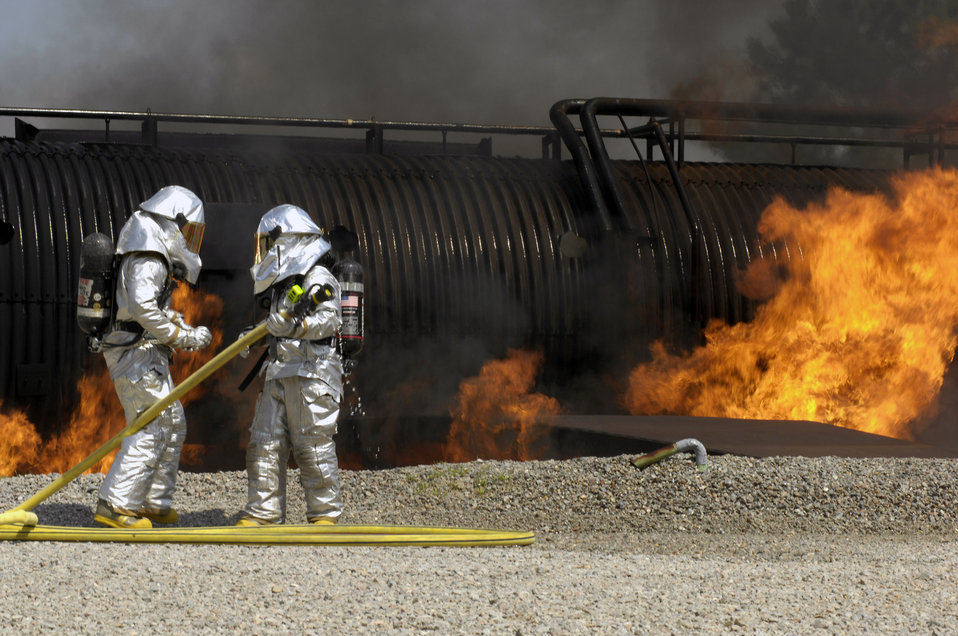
It's getting hot!

Members of the 20th Civil Engineer Squadron fire protection flight at Shaw Air Force Base, S.C. neutralize a fire June 15 during an operational readiness inspection. The ORI evaluated ability of Shaw personnel to survive and operate in combat conditions.